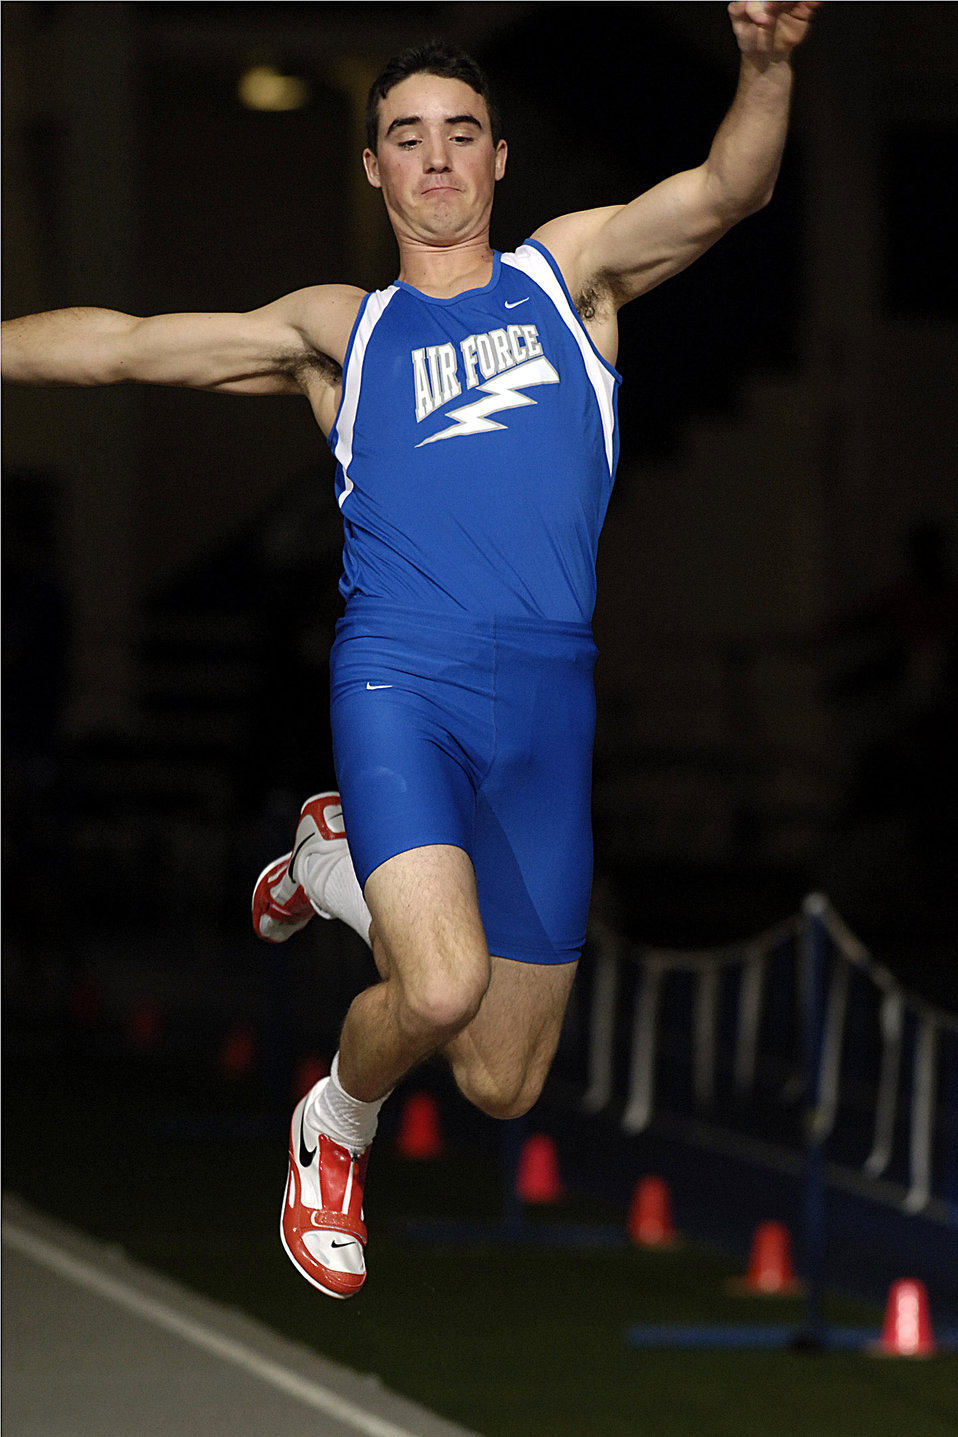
Long jump

U.S. Air Force Academy Falcon freshman Philip Rancourt competes in the long jump as the Air Force track and field team officially opened the season by hosting the annual Air Force All-Comers Meet Jan. 13 at Colorado Springs, Colo. In his collegiate debut, Rancourt finished fourth among collegiate competitors with a jump of 19 feet 8 inches.